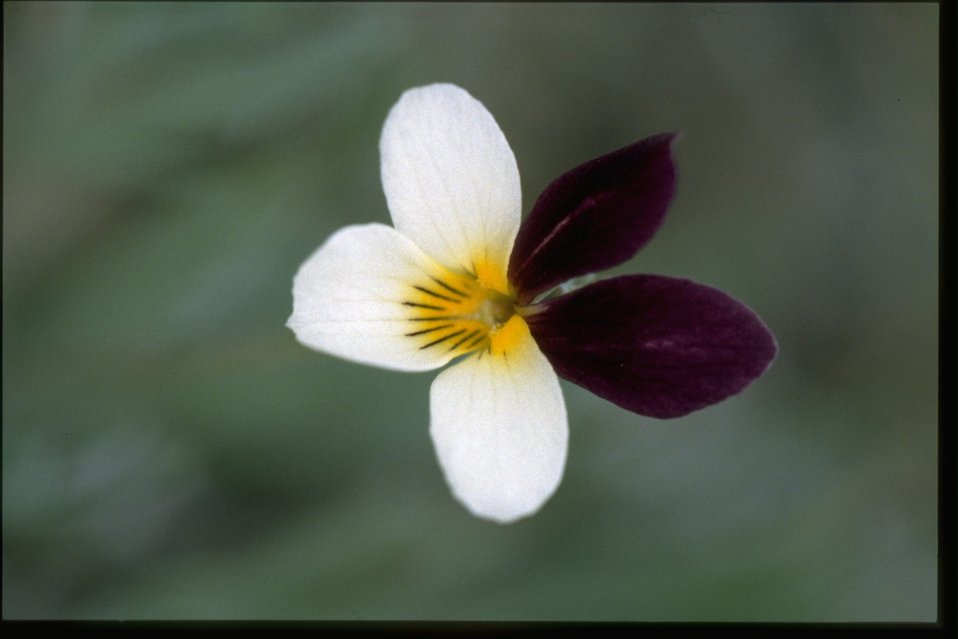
Closeup shot of Viola hallii.